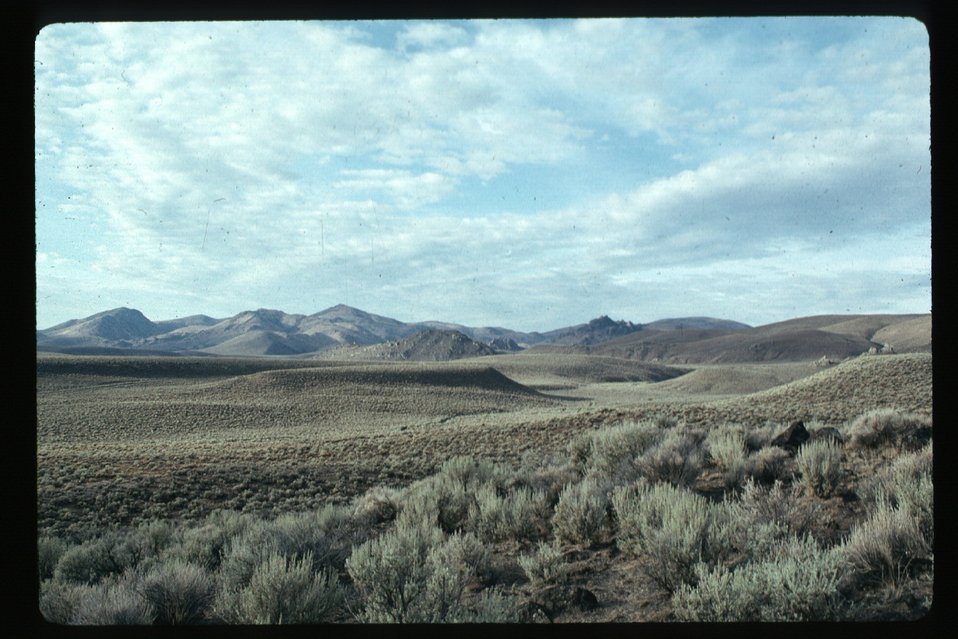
Wild horse roundup Wild Horse and Burro Adoption Program LSRD Lower Snake River District